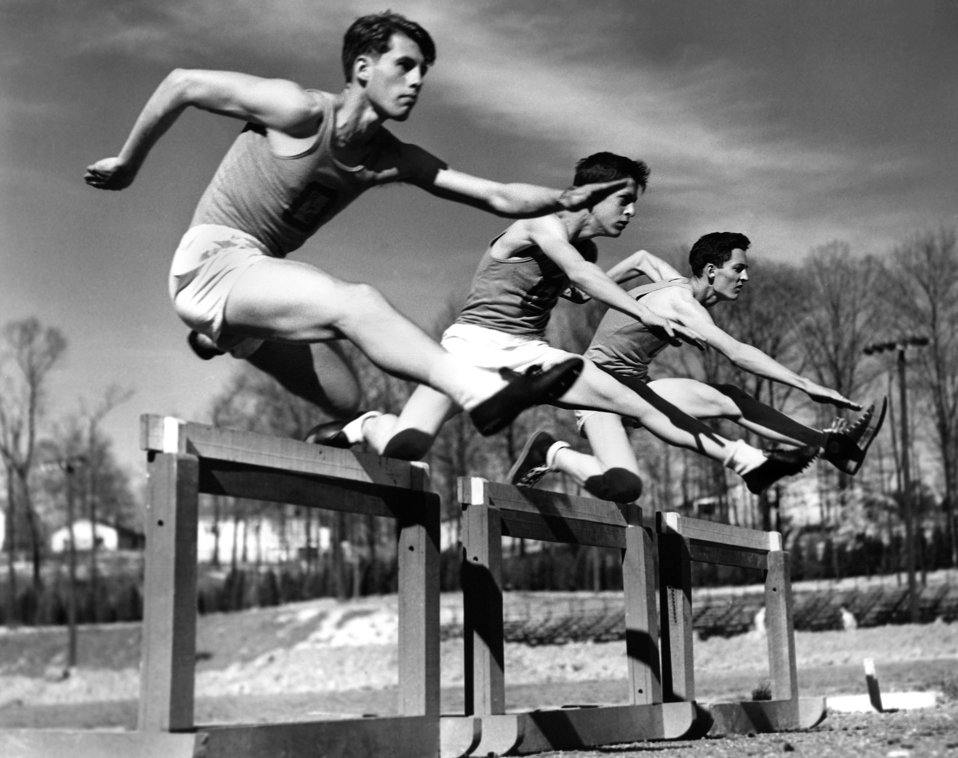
High School Track Meet Hurdles Oak Ridge

4450-2 DOE photo Ed Westcott 4-9-1948 Oak Ridge Tennessee